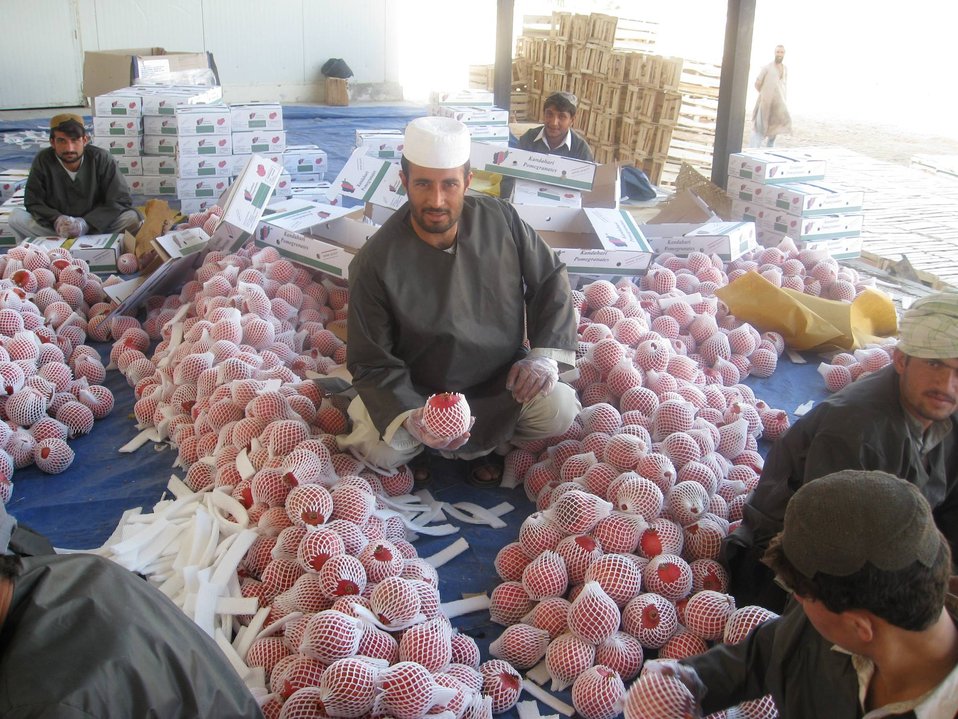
Pomegranates